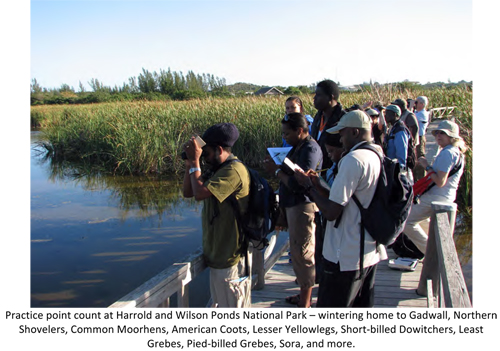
SCSCB-FWS-Interim-Report-2011